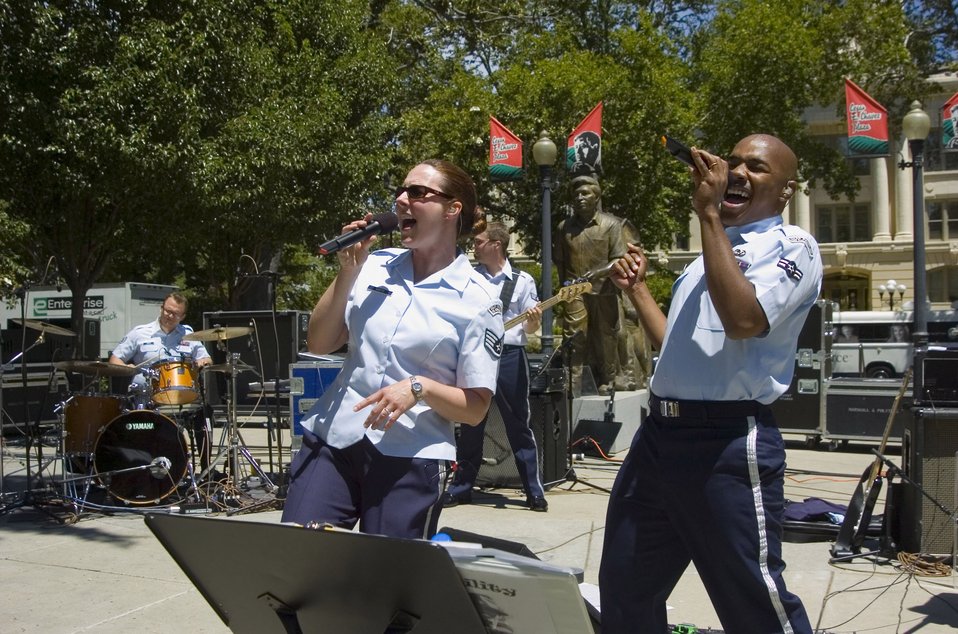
Band of the Golden West rocks downtown Sacramento

Staff Sgt. Paula Goetz and Airman 1st Class Andrew Jones of the Air Force Band of the Golden West from Travis Air Force Base, Calif., perform in the Cesar Chavez Plaza as part of Air Force Week June 7 in Sacramento, Calif. Sergeant Goets and Airman Jones are vocalists. Also performing are Staff Sgt. Troy Griffin on the drums and Senior Airman Jason Hafer on the bass guitar.